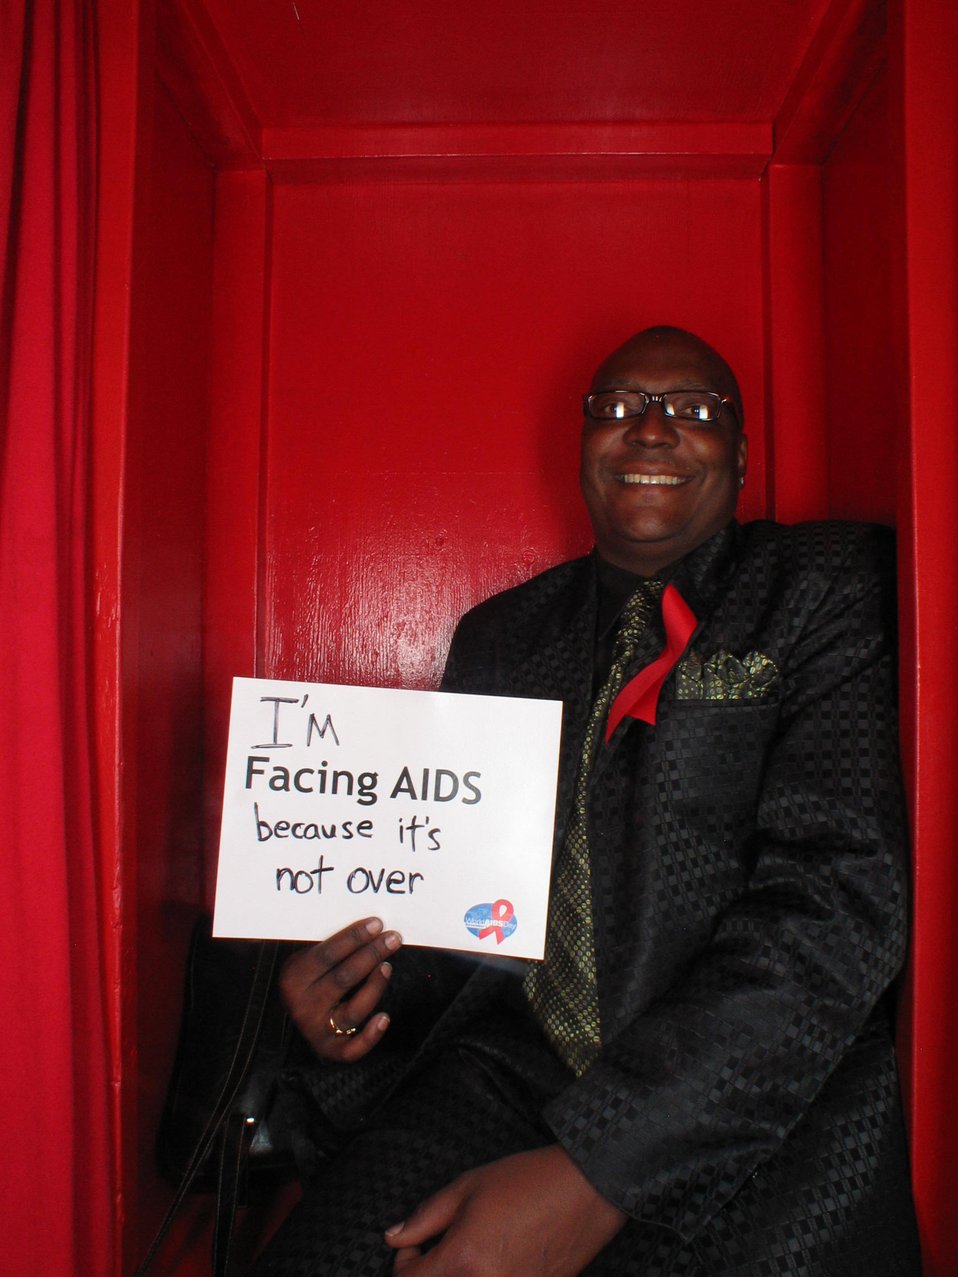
I'm Facing AIDS because it's not over.